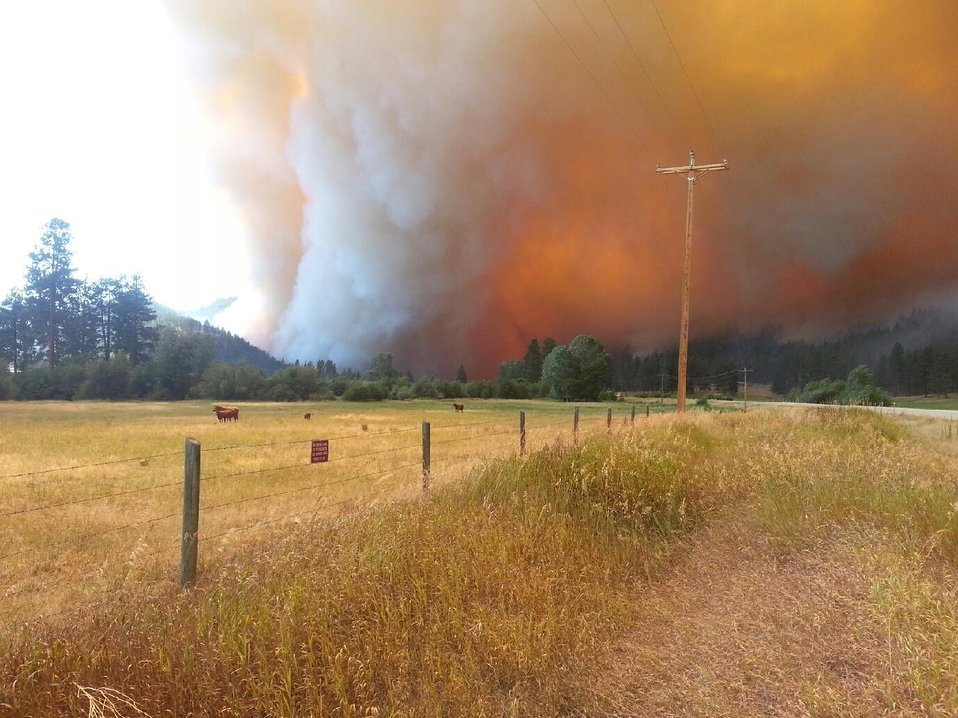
The Lolo Creek Fire in the Lolo National Forest near Lolo, MT began on Aug. 18, 2013 by lightning has consumed approximately 10,892 acres and is 47% contained.